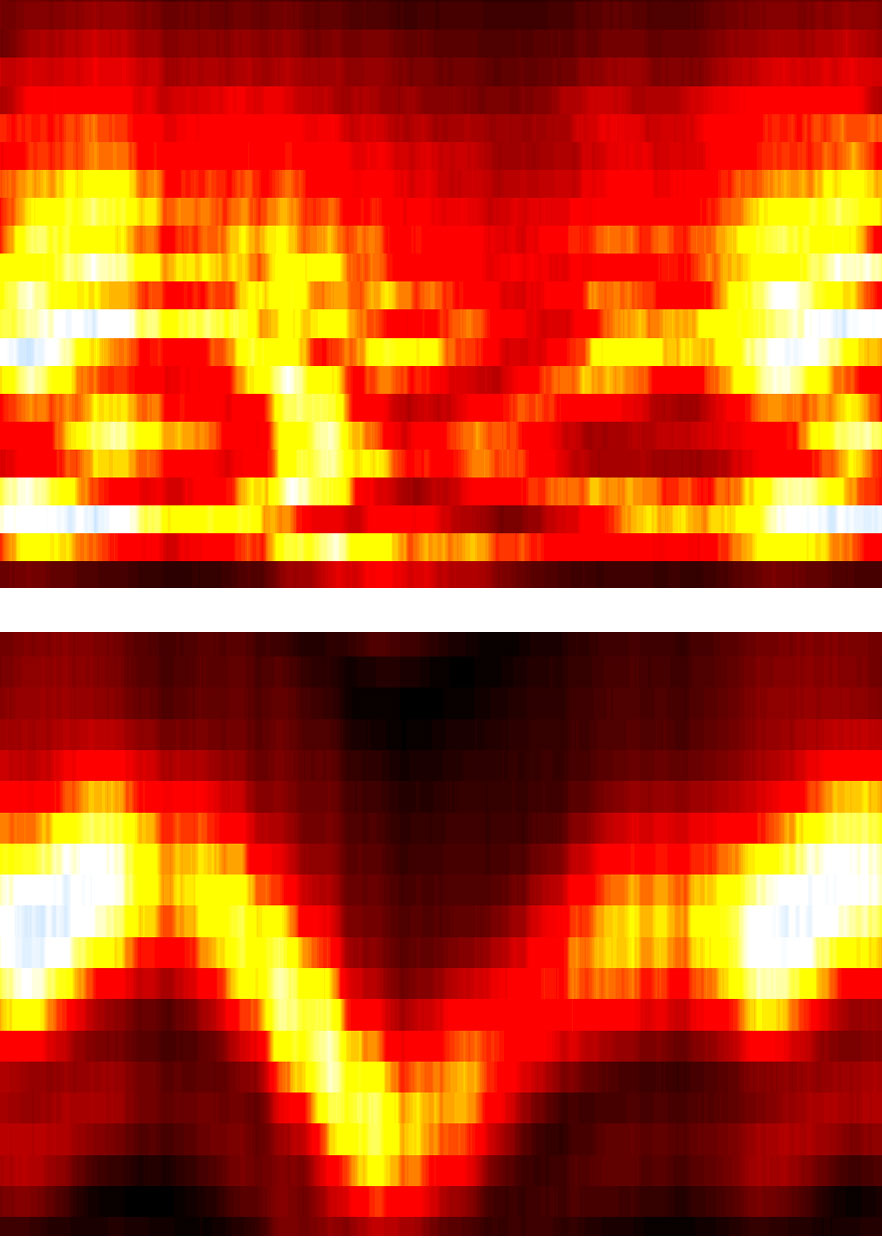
LIDAR; Remote Measurements

Conventional laser ranging systems would fail to produce usable data on the range to a target about 1 kilometer away (false color image, top). By contrast, the NIST system obtains a clear image of the relative changes in the range to the target with time. The rise and fall of the plot (bottom) represents very small changes in range from the detector to the surface of a rotating, wobbling disk.